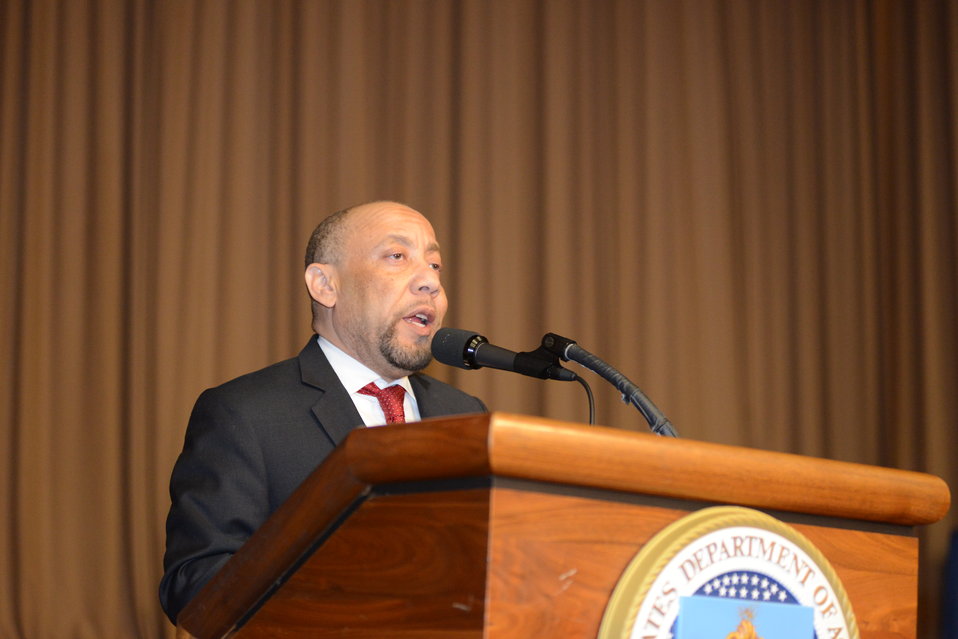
National Gay and Lesbian Task Force Senior Counsel Kylar Broadus speaks at the 2014 Lesbian/Gay/Bisexual/Transgender (LGBT) Pride Observance event held in the Jefferson Auditorium at USDA in Washington, D.C. on Thursday, Jun. 5, 2014.